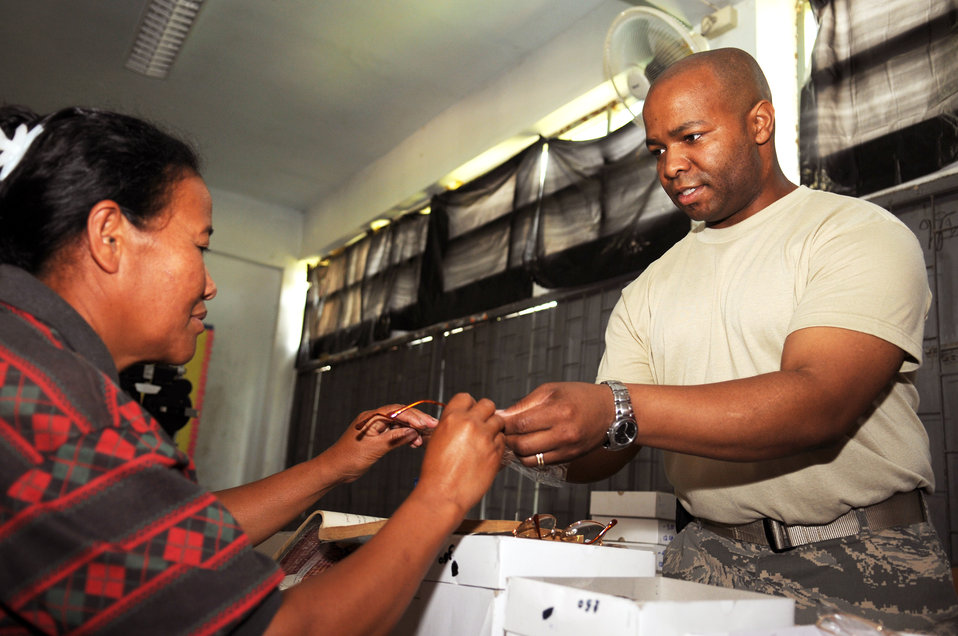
PACAF provides much needed dental and ophthalmologic care to underprivileged in Thailand.

Tech. Sgt. Alex Byrd issues out prescribed eyeglasses during a joint and multinational humanitarian mission to provide much needed ophthalmologic care to Thailand's underprivileged during Cope Tiger 2009 on March 16. Cope Tiger is an annual exercise held in Thailand to improve combat readiness and combined and joint interoperability of U.S., Thai and Singaporean forces while enhancing regional security and providing humanitarian support. Sergeant Byrd is an Ophthalmic Technician from the 51st Aerospace Medical Squadron at Osan Air Base, Republic of Korea.